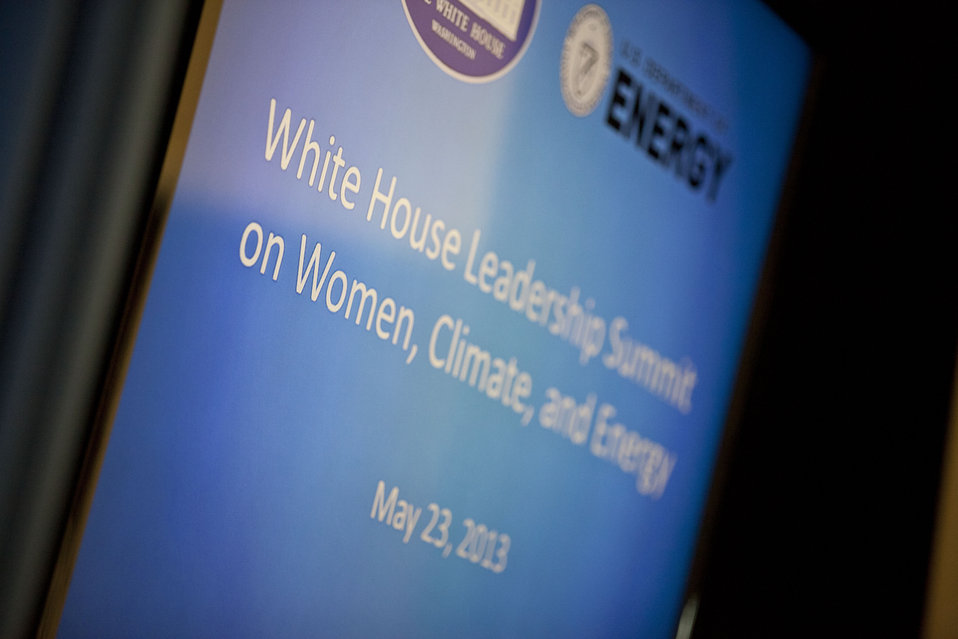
White House Leadership Summit on Women, Climate and Energy